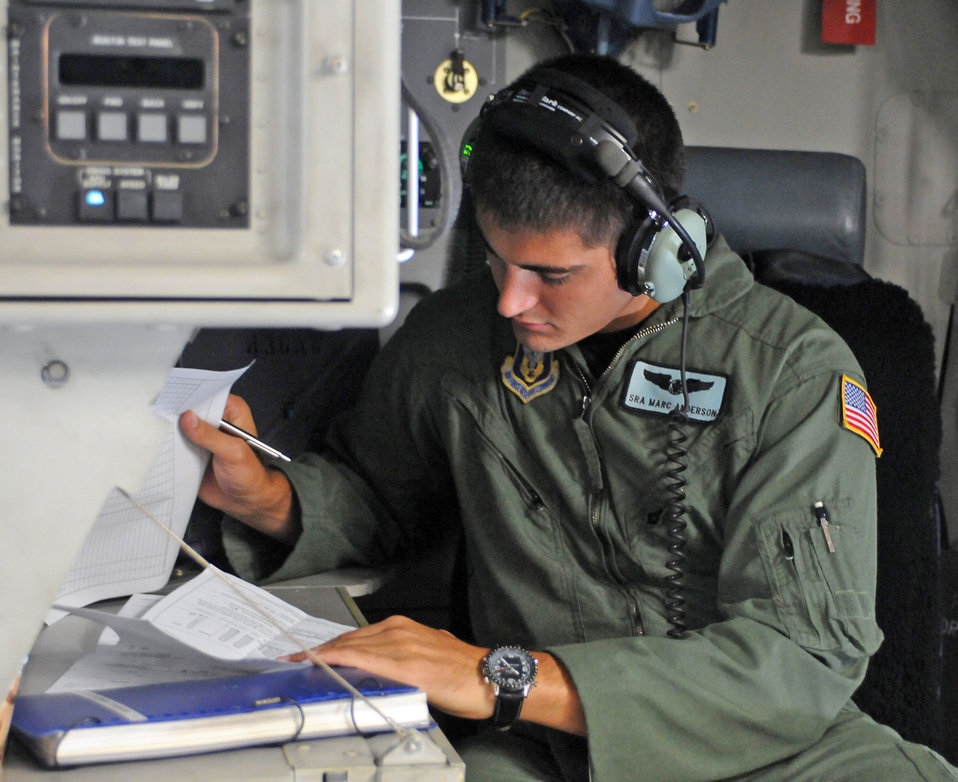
Dover reservists work to form Canadian sister squadron program

Senior Airman Marc Anderson, a C-17 Globemaster III loadmaster with the Air Force Reserve Command's 512th Airlift Wing at Dover Air Force Base, Del., completes weights and balances paperwork Aug. 22 to ensure the aircraft is properly configured prior to take off. The aircraft was flying to Canadian Forces Base Trenton in Ontario, where the Dover reservists would spend three days with Royal Canadian Air Force members to forge a partnership and identify future training opportunities for flying, aerial port operations, airlift control and maintenance procedures.